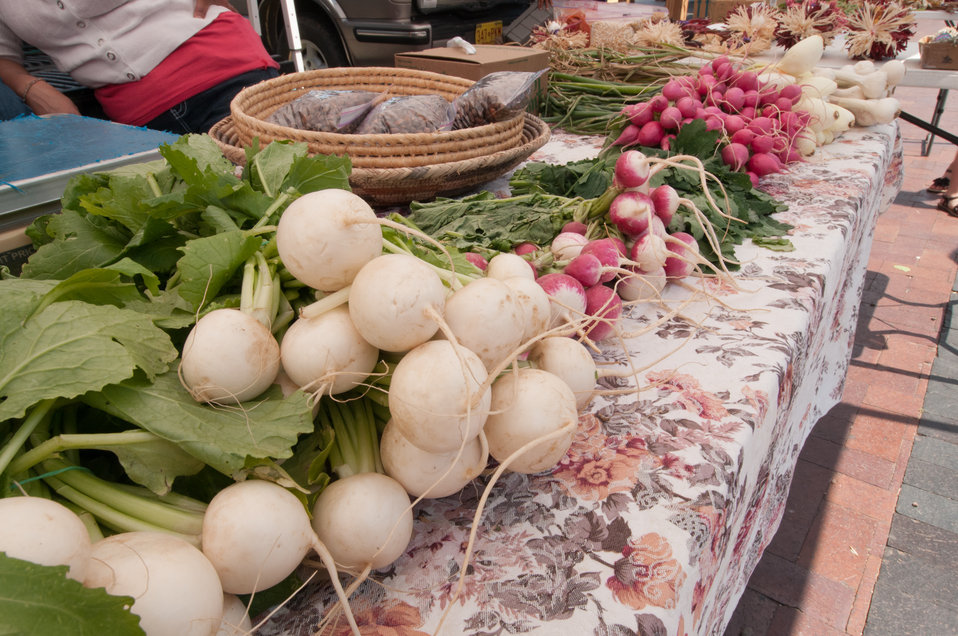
The Santa Fe Farmers Market is one of the oldest, largest and most successful growers’ markets in the country. Serving farmers and producers in 15 Northern New Mexico counties, the market brings fresh food; education promotes small farms and sustainable agriculture in Northern New Mexico. The Market began with a handful of farmers in the late 1960’s and represents over 100 active vendors and features hundreds of different agricultural products. The Santa Fe Farmers Market assures 100% percent of the vegetables, fruits, and nursery plants available at the market are locally grown by the people selling them.